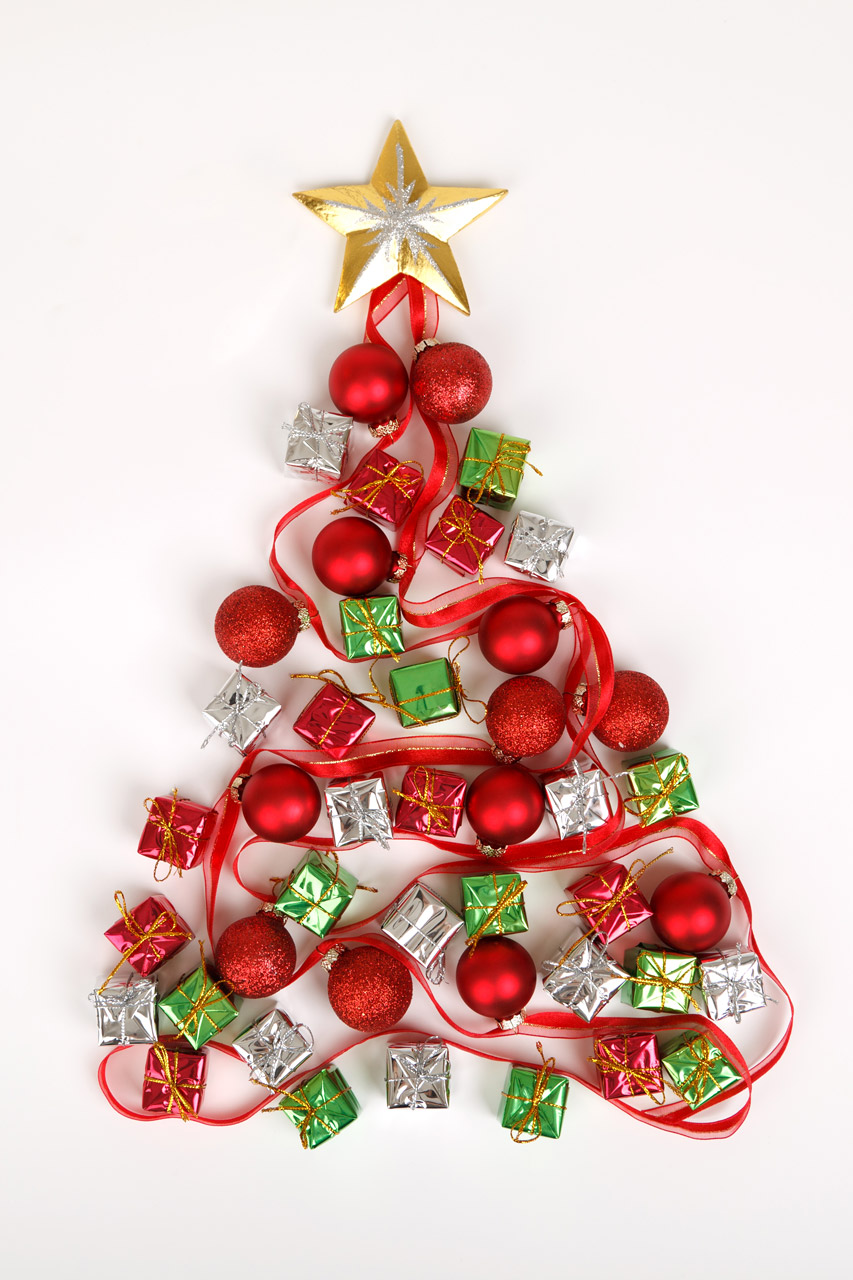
Christmas tree made from baubles, presents and ribbon on white background.